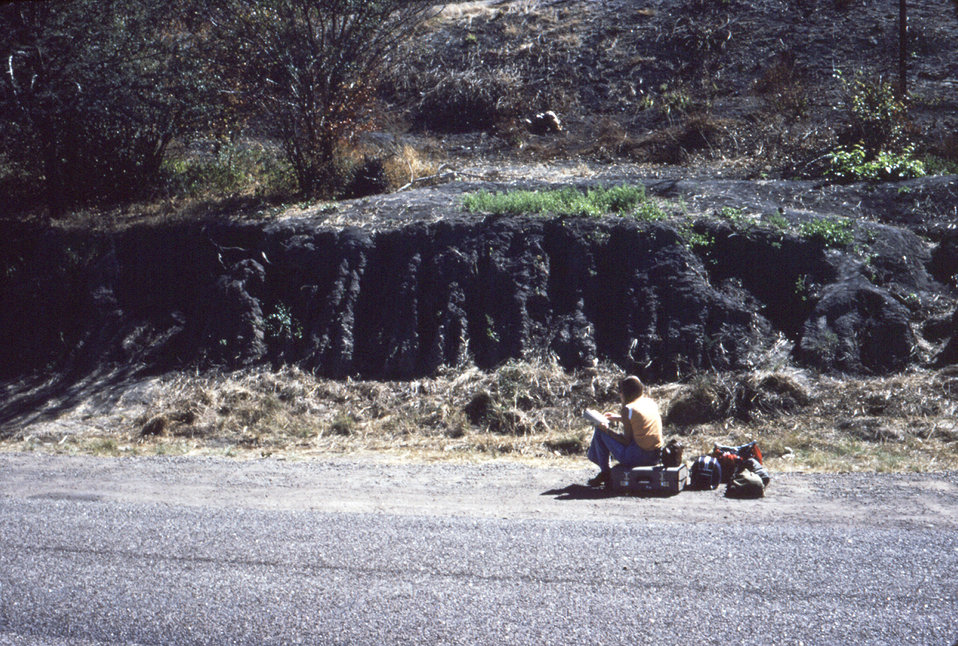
This photograph, taken in 1975 during the Rhodesian, now Zimbabwean Marburg fever outbreak investigation, shows a Wankie, Rhodesian (now Zimbabwean) roadside, which was a popular resting site among hitchhikers.